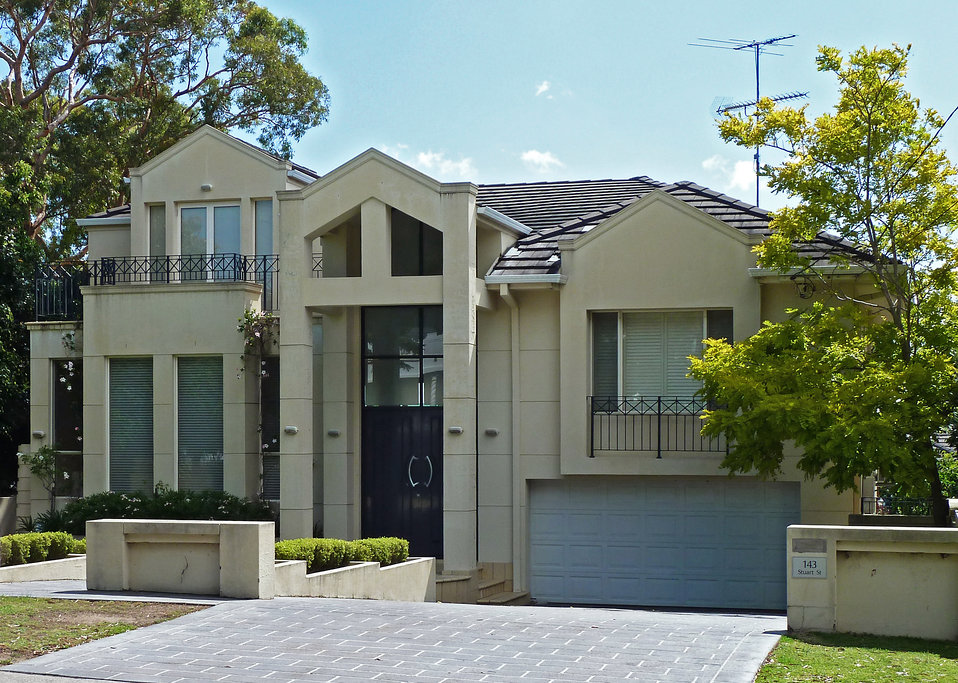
143 Stuart Street, Blakehurst, New South Wales, Australia.